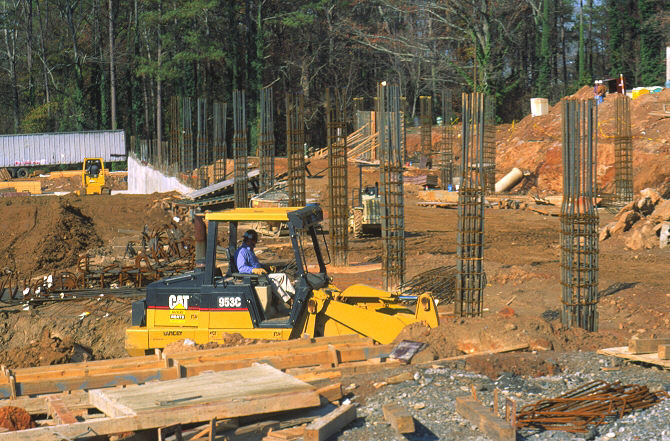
Construction site for south parking deck, CDC Roybal Campus.